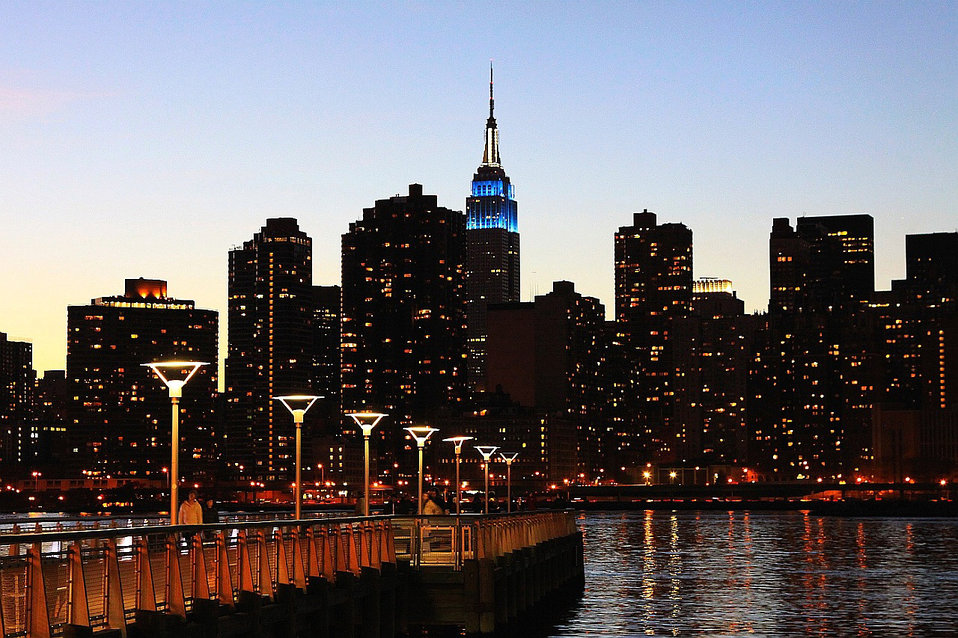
Night on east river ny

East river after sunset.